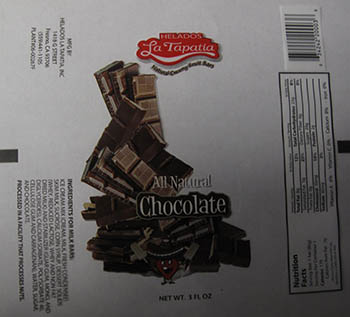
RECALLED – Ice cream products

March 19, 2014 – Product Recall – Helados La Tapatia, Inc. Recalls Products Because of Possible Health Risk.